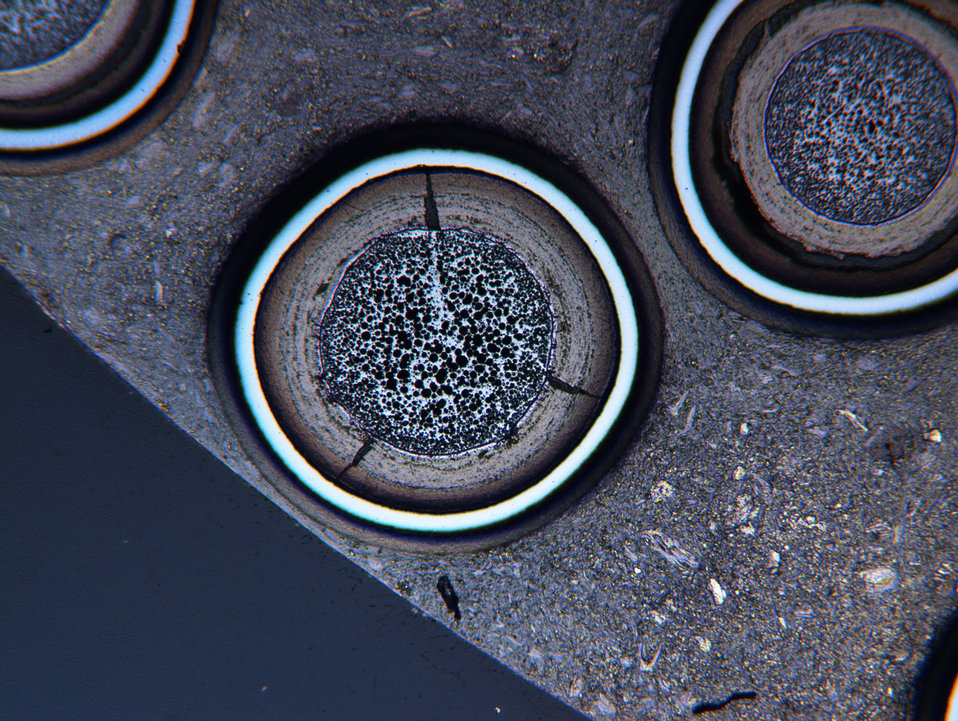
INDIVIDUAL TRISO PARTICLES AT 100UM SCALE AT IDAHO NATIONAL LABORATORY.

TRISO fuel particles are the size of poppy seeds. Break one open and it looks like tiny jaw-breakers. An outer shell of carbon coats a layer of silicon carbide, which coats another layer of carbon and the uranium center- where the energy-releasing fission happens. By-products of the fission process have the potential to escape the fuel, especially at very high temperatures. Even at 1,800, which each boast their own primary containment system.